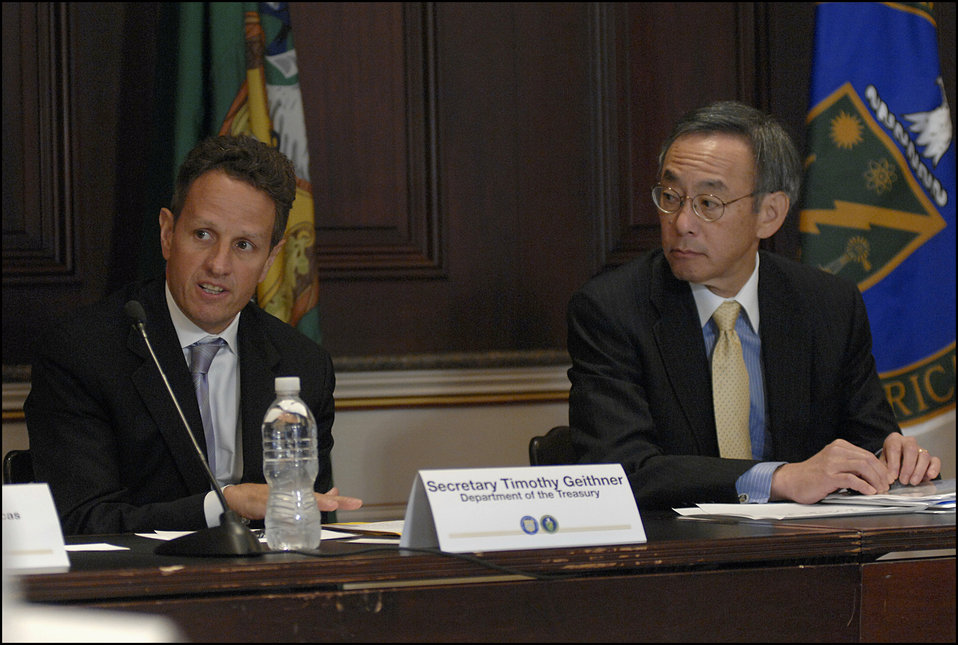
Roundtable061 1